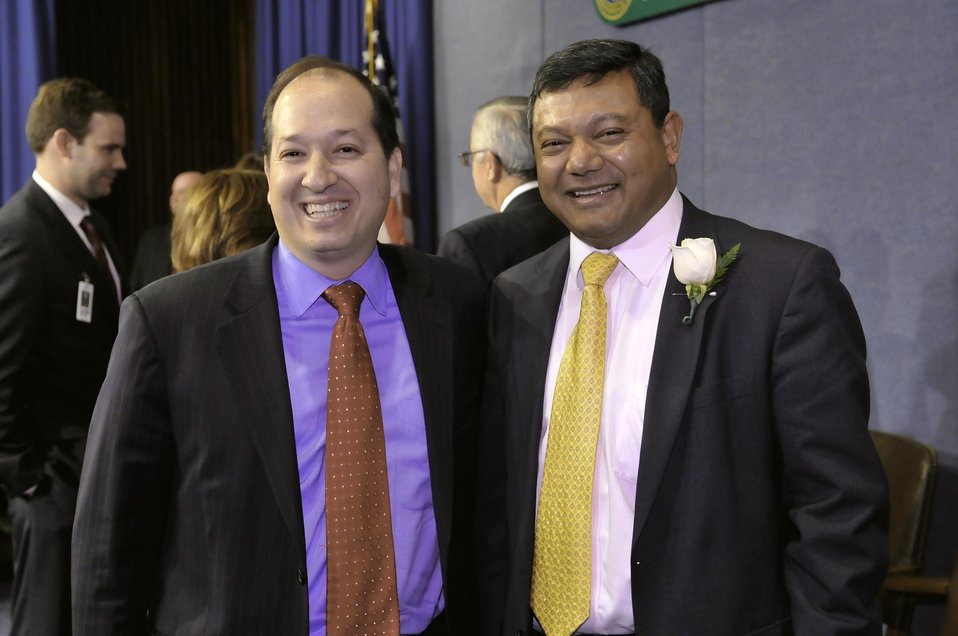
DSC21~2